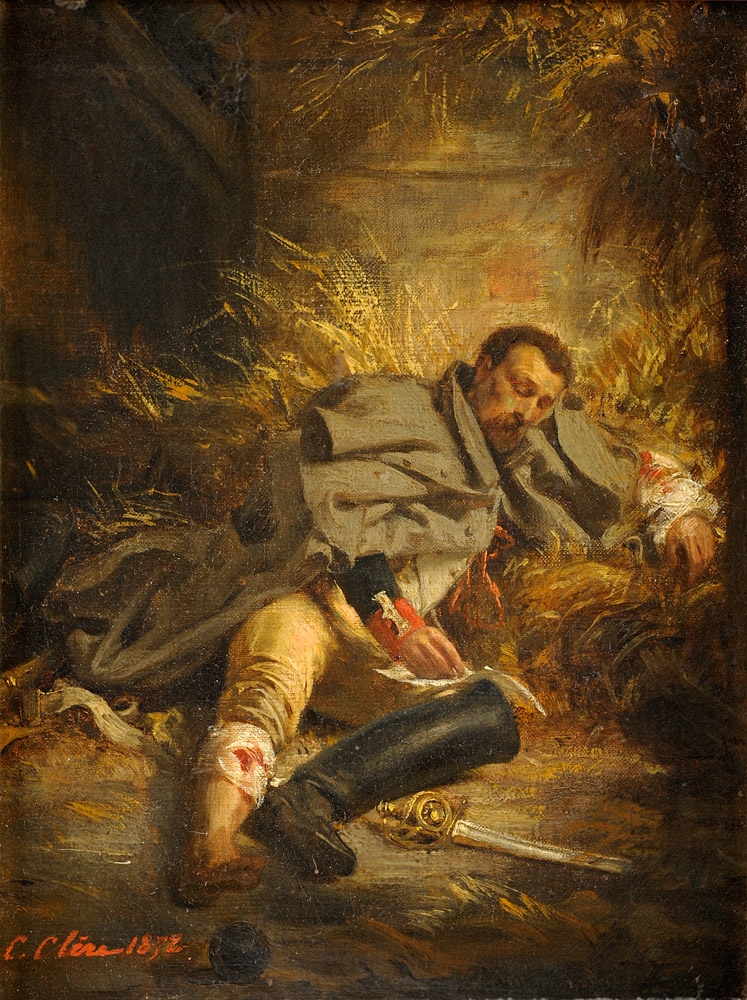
Verwundet. Signiert. Öl auf Leinwand, 25 x 19 cm